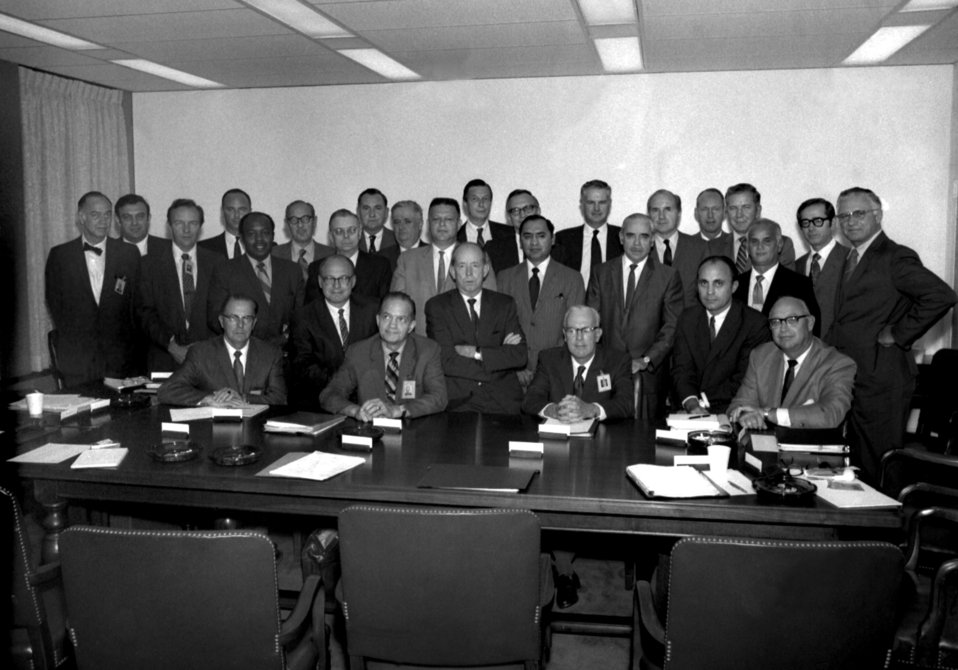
US AEC Managers Meeting Oak Ridge

70-336 DOE photo by Frank Hoffman US AEC (Atomic Energy Commission)Managers Meeting Oak Ridge Tennessee 10-22-1970